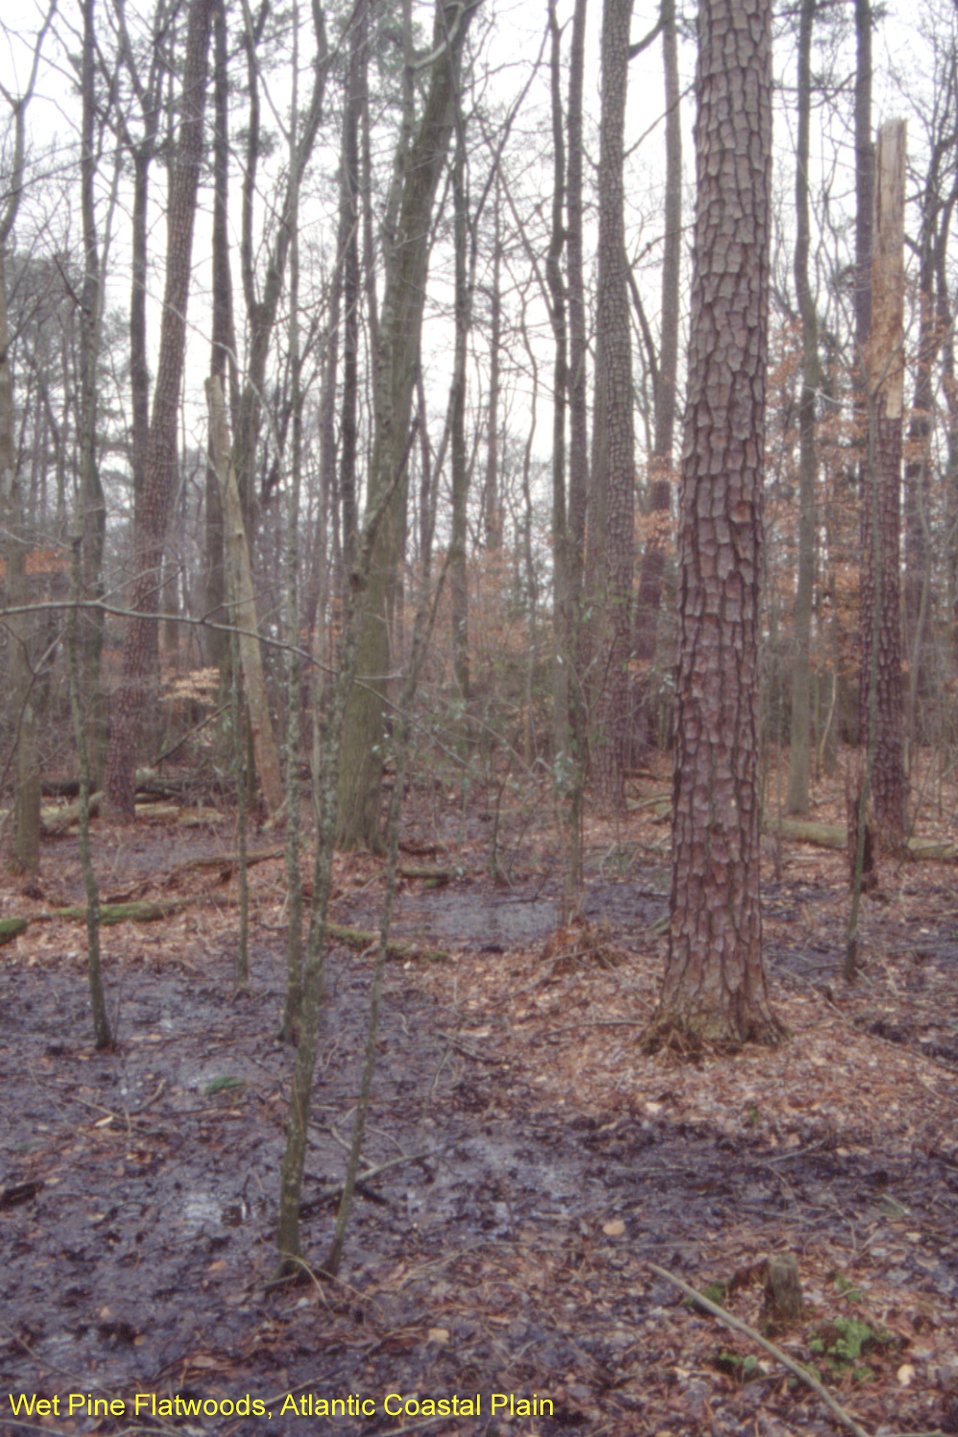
Wet Pine Flatwoods, Atlantic Coastal Plain